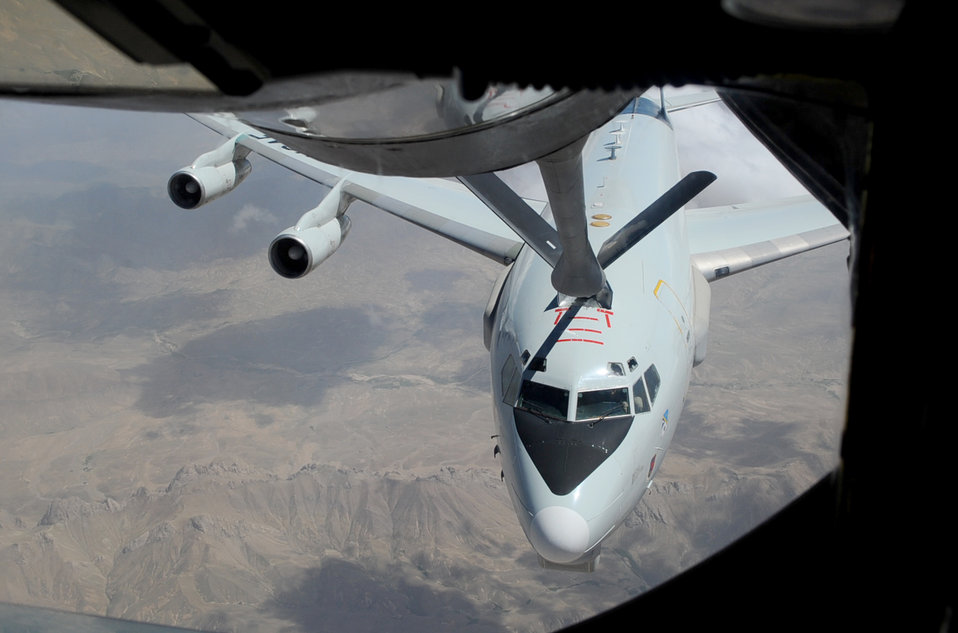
Aviation fuel savings

An E-3 Sentry receives fuel from a 340th Expeditionary Air Refueling Squadron KC-135 Stratotanker May 25, 2010, while flying over Afghanistan.